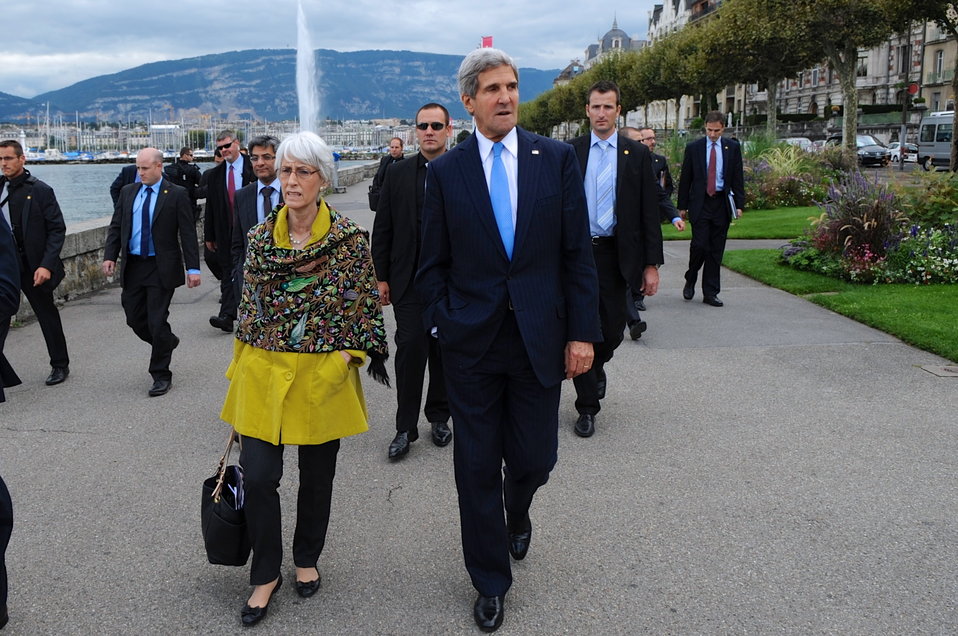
Secretary Kerry and Undersecretary Sherman Walk Along Lake Geneva

U.S. Secretary of State John Kerry and Undersecretary for Political Affairs Wendy Sherman take a walk along Lake Geneva, Switzerland, before meetings with Russian officials focused on Syrian chemical weapons on September 12, 2013.